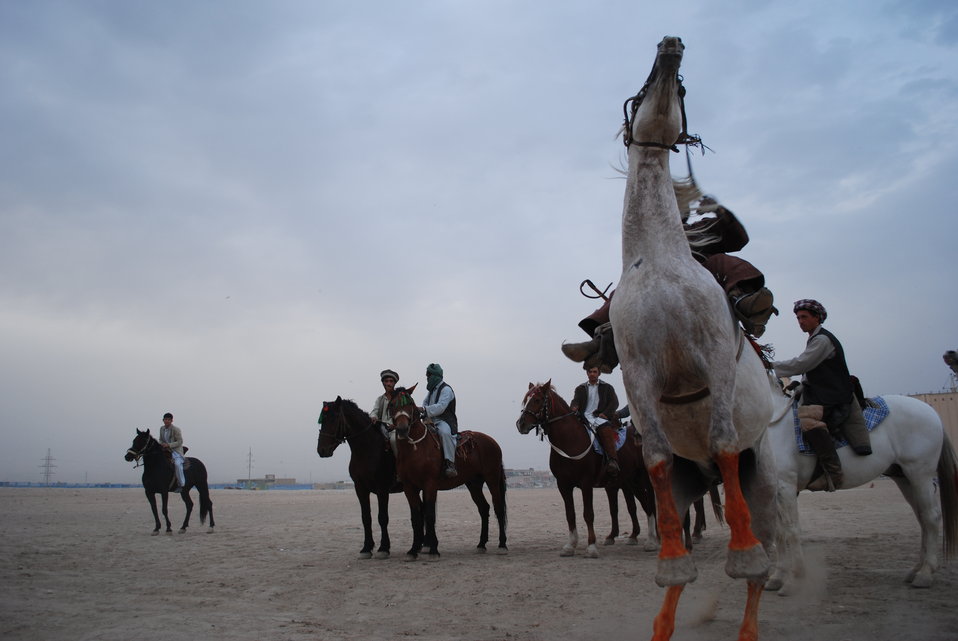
'On the Road' in Balkh Province